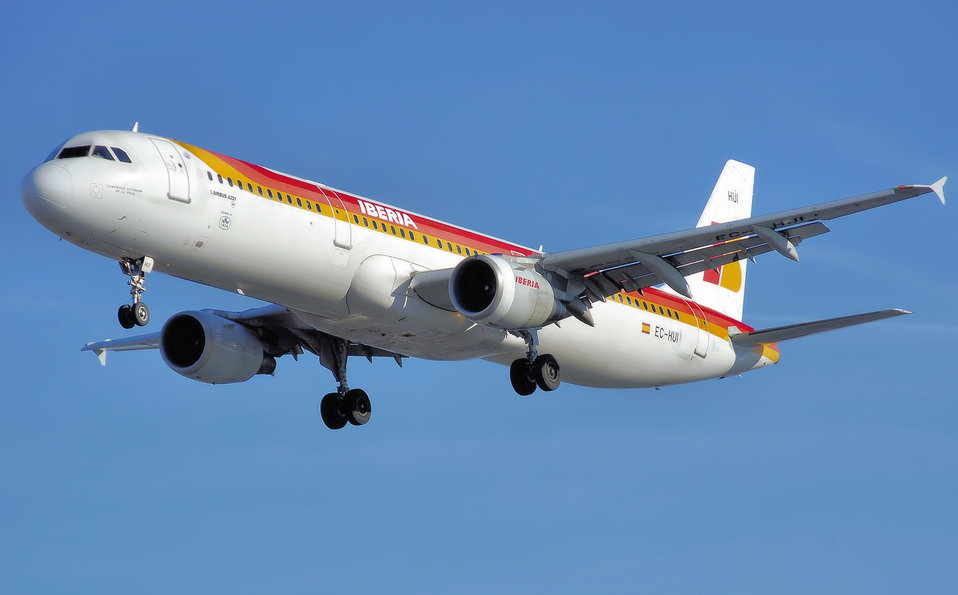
Iberia Airbus A321-200 (EC-HUI) lands at London Heathrow Airport, England.